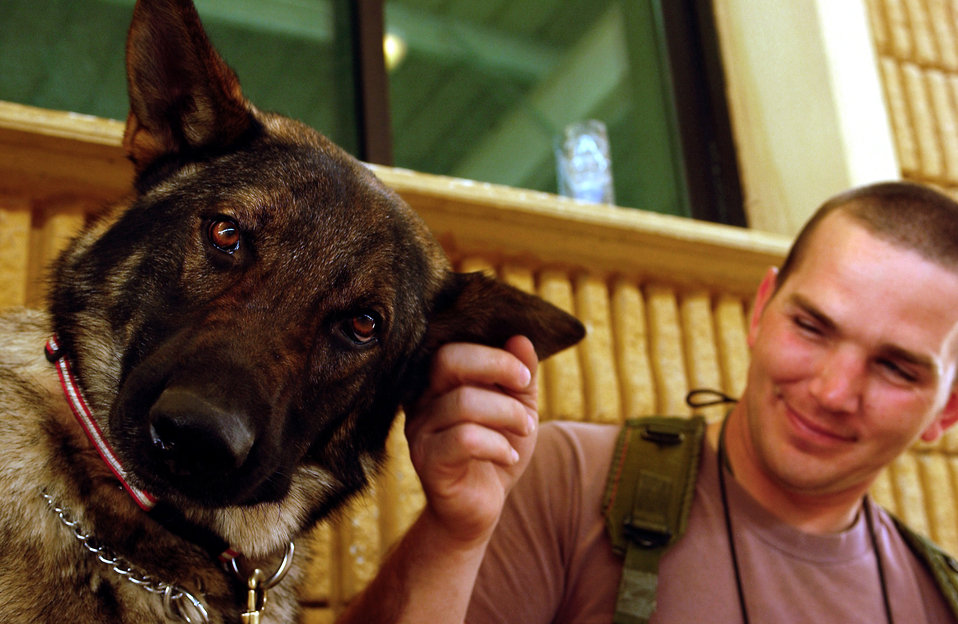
My Hero

OPERATION IRAQI FREEDOM -- Staff Sgt. Chad Reemtsna, a military working dog handler and Hero, his military working dog both deployed from the 18th Security Forces Squadron, Kadena Air Base, Japan to the 363rd Expeditionary Security Forces Squadron, spend quality time together while waiting for more vehicles to search during a mobile security patrol on April 8. Before military working dogs can be deployed they must pass an explosive ordinance test. The 363rd ESFS search crews work around the clock checking coalition forces, third country nationals, and contractor vehicles for bombs and other explosive devices in support of Operation Iraqi Freedom at a forward deployed location in Southwest Asia.